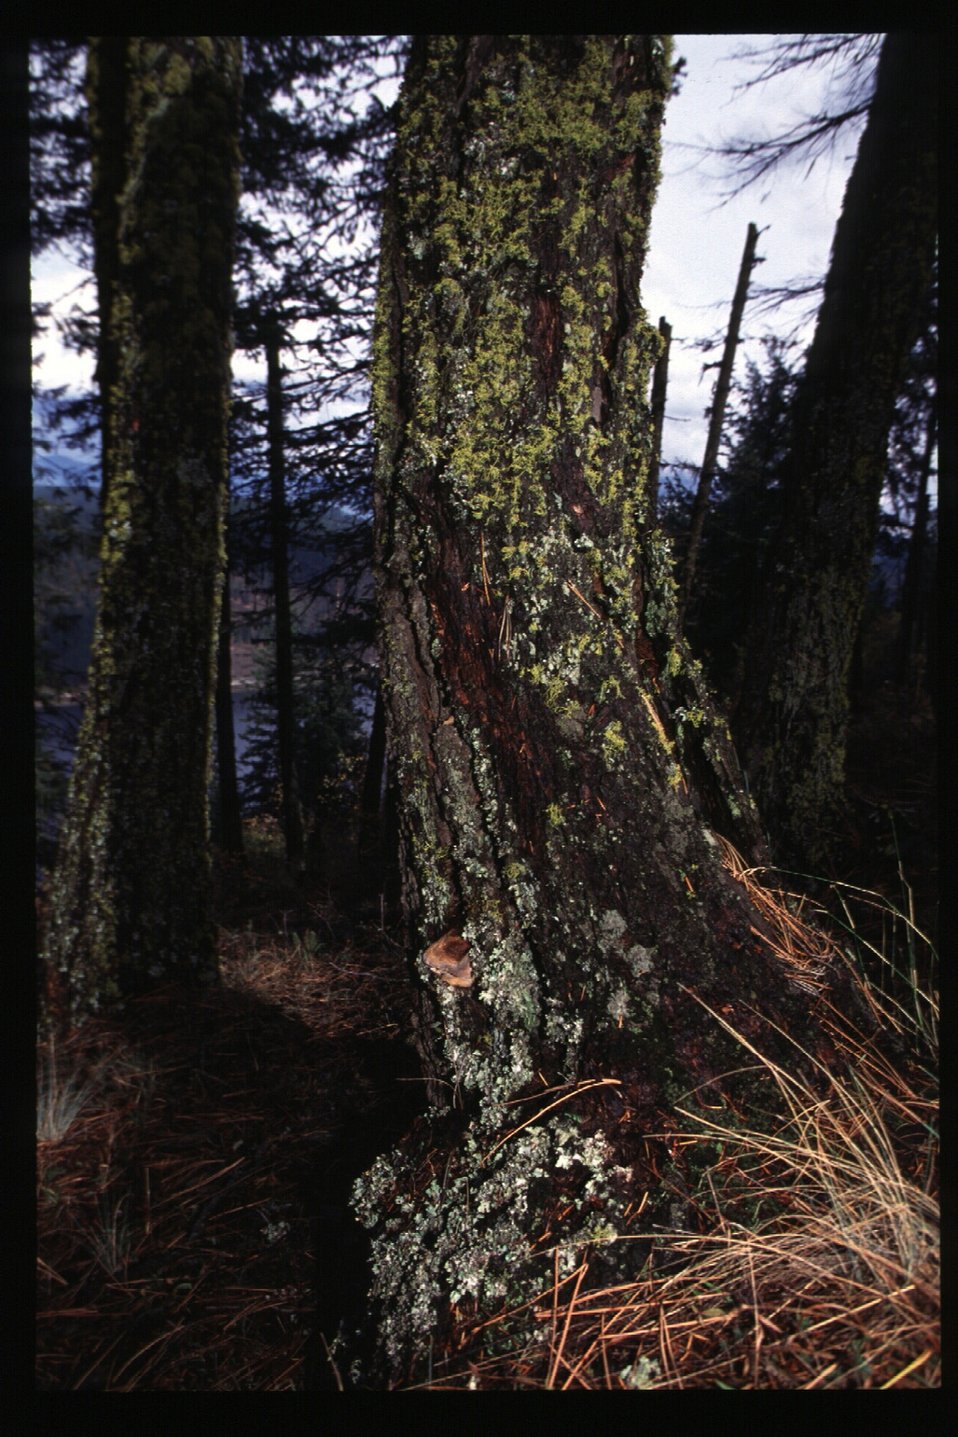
Mineral Ridge Trail Couer d'Alene UCSC Upper Columbia Salmon Clearwater District